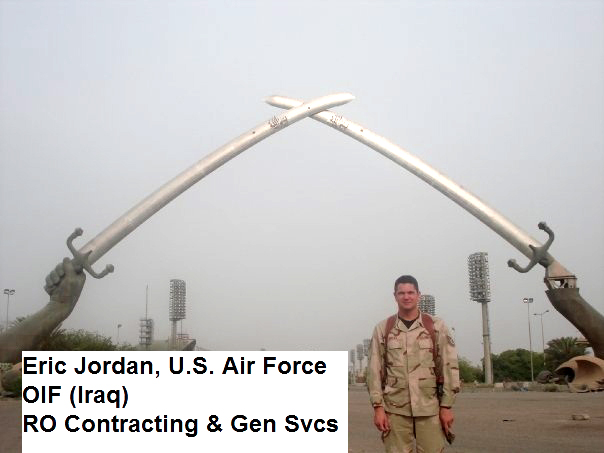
Eric Jordan in Iraq

Eric Jordan of Region 6 served in Iraq during Operation Iraqi Freedom in the Air Force.